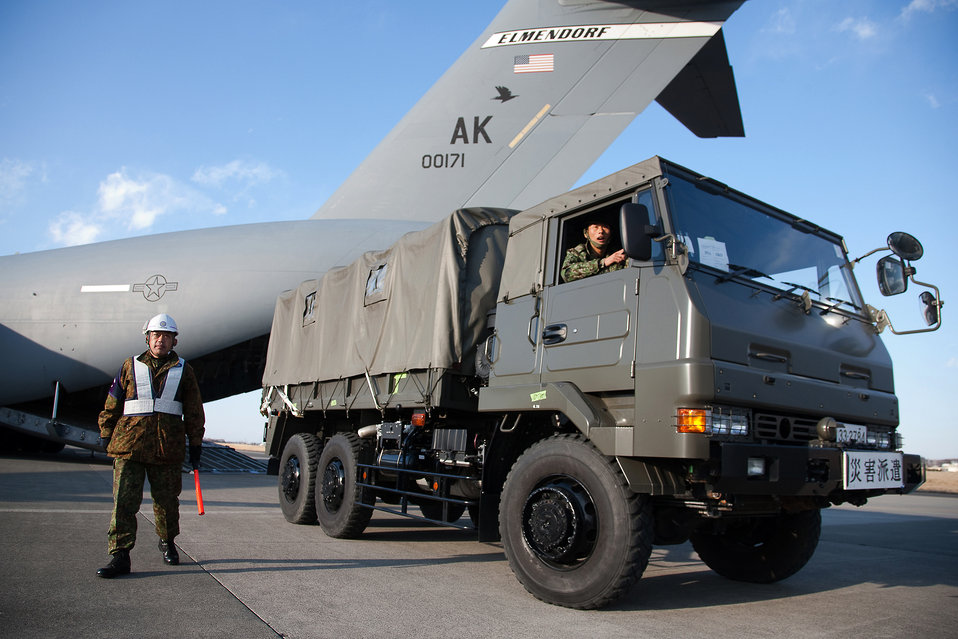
C-17 transports Japanese forces to help relief efforts

Japanese 1st Lt. Akira Takahashi marshals vehicles from the 15th Brigade, Japan Ground Self-Defense Force, March 17, 2011, at Yokota Air Base, Japan. The C-17 Globemaster III transported JGSDF troops and vehicles from Okinawa to support the relief effort after the earthquake and tsunami, March 11. Lieutenant Takahasi is assigned to the central transportation management command.